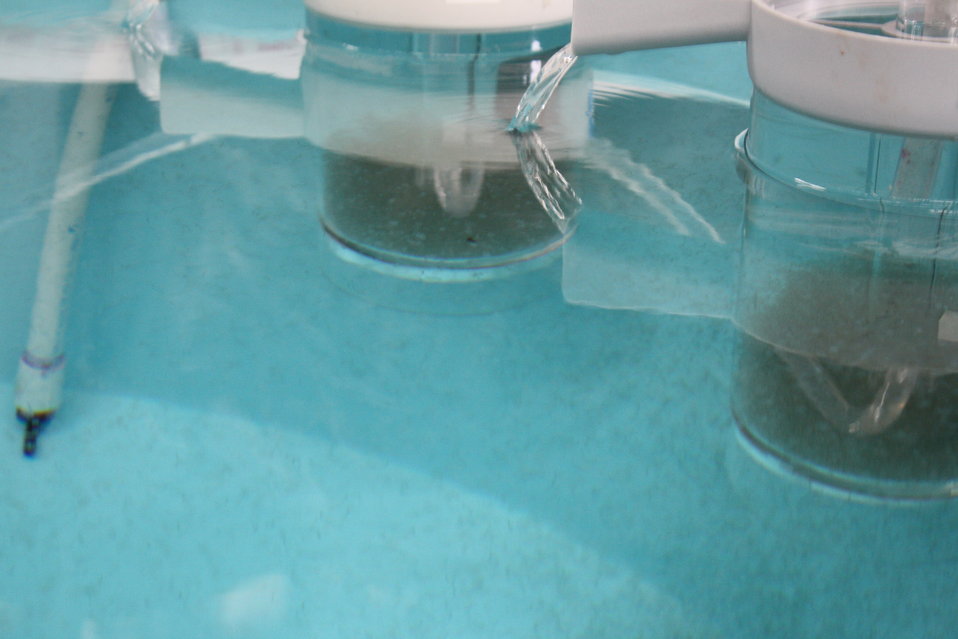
Nashua National Fish Hatchery welcomes regional office employees

Shad eggs hatching and swimming to larger tank.